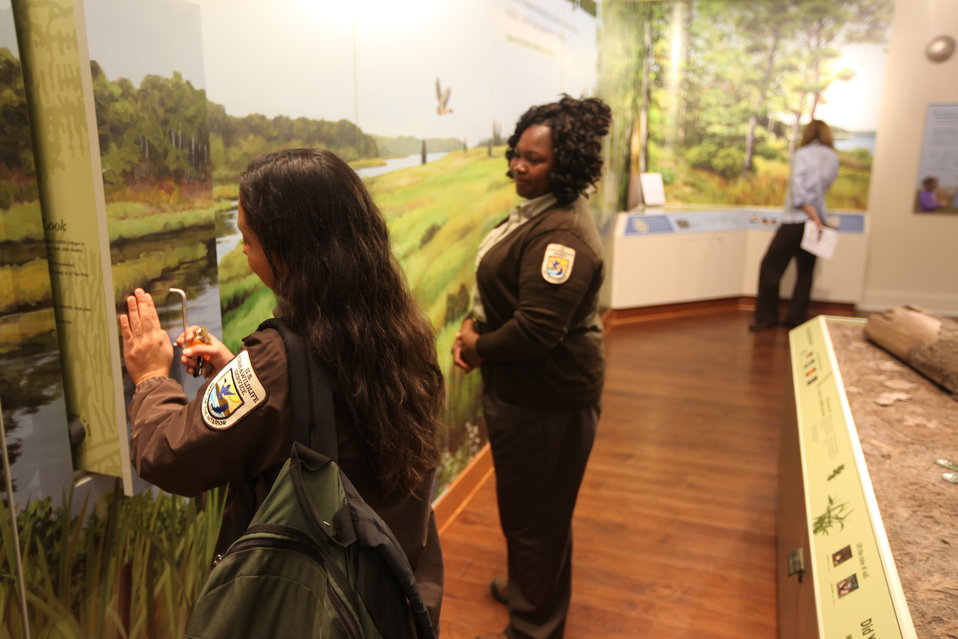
Staff get ready

Refuge staff check exhibits and prepare for the first visitors!